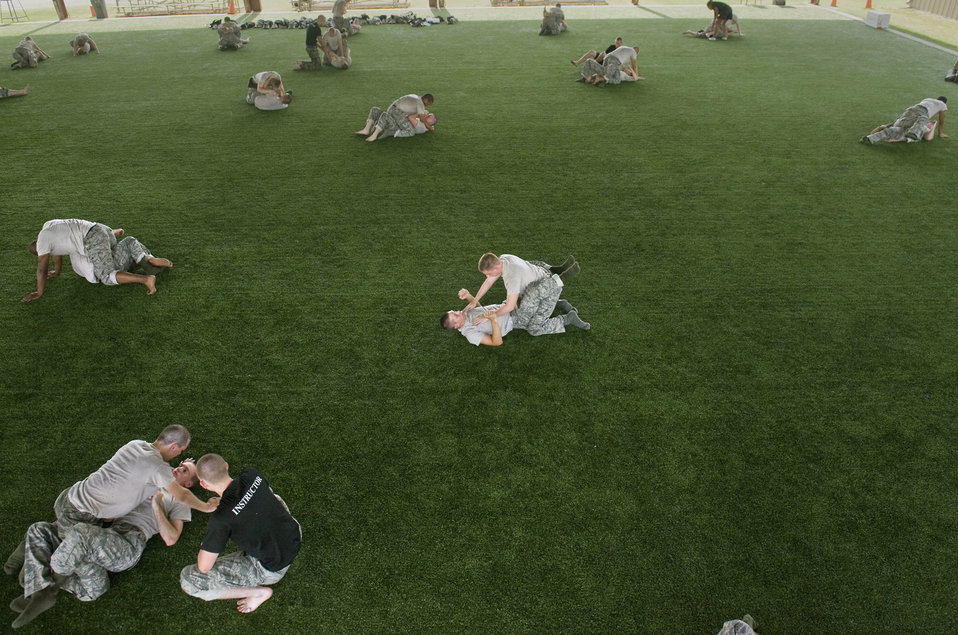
Instructors teach ROTC cadets defense techniques

ROTC cadets perform exercises during combative training at Maxwell Air Force Base, Ala., July 22, 2010. The cadets are participating in a month-long summer camp which prepares them to becoming the future leaders of tomorrow's Air Force.